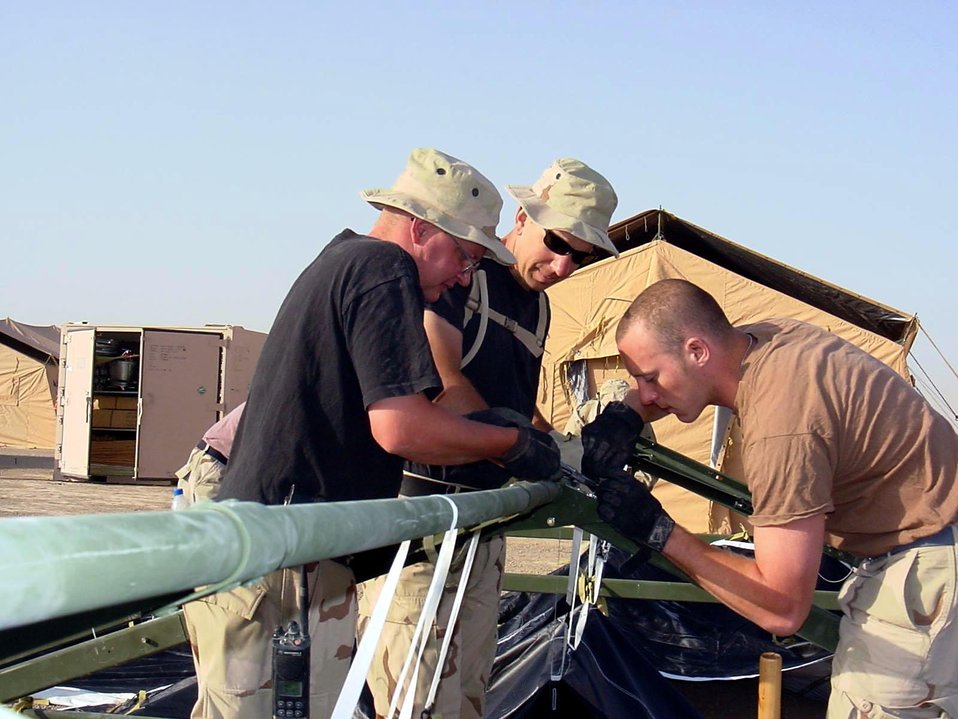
Tallil tents

OPERATION IRAQI FREEDOM -- Airmen build themselves a home at Tallil Air Base in southern Iraq on April 24. The airmen, assigned to the 407th Expeditionary Services Squadron here, are (from left) Staff Sgt. Bill Hunter, Maj. Matt McCleskey and Airman 1st Class John Phillips. The